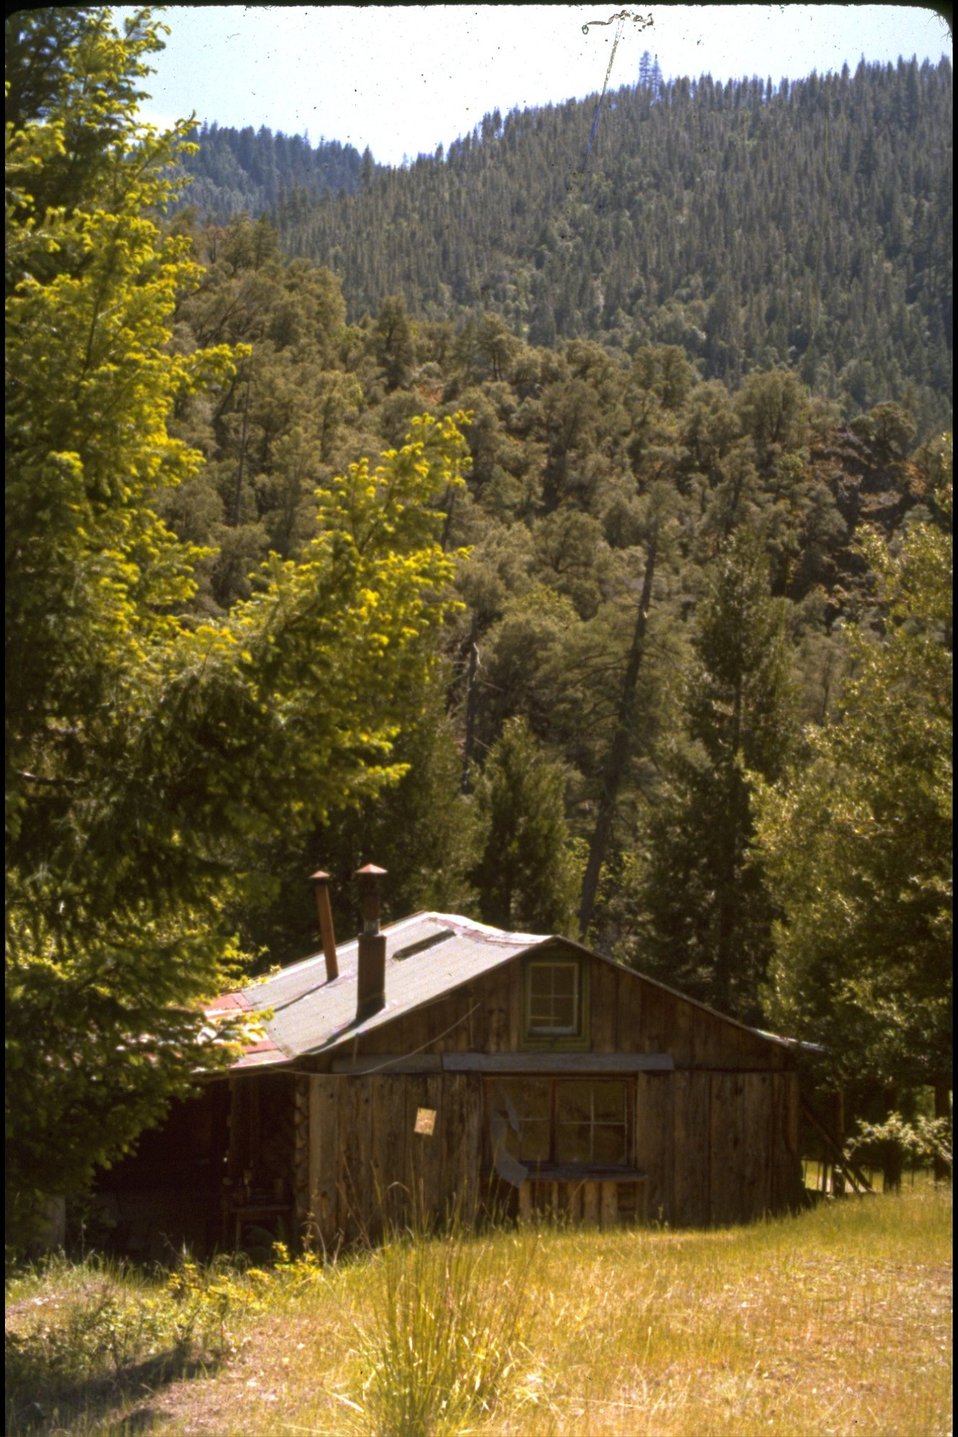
Rogue River - Cabin.